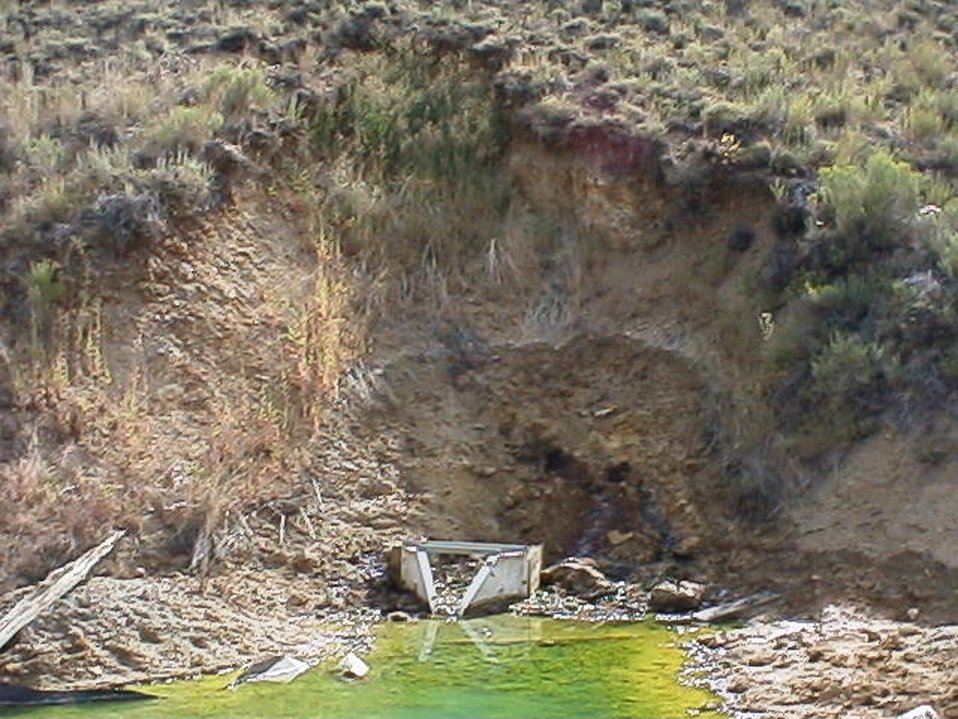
Moran Tunnel Mine adit empties into Champagne Creek pH of water is 2.5 to 3.5 Water is blue-green from copper sulfate Idaho Falls Field Office USRD Upper Snake River District